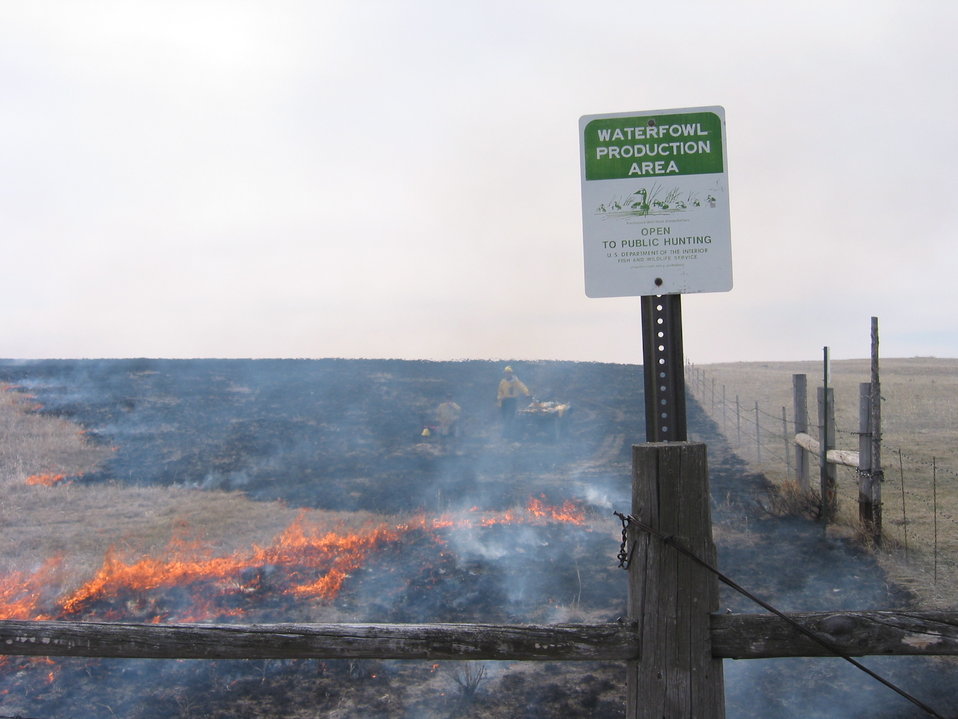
Habitat Enhancement

Fire stimulates plant growth, returns nutrients to the soil, scarifies native seed and restores upright structure.